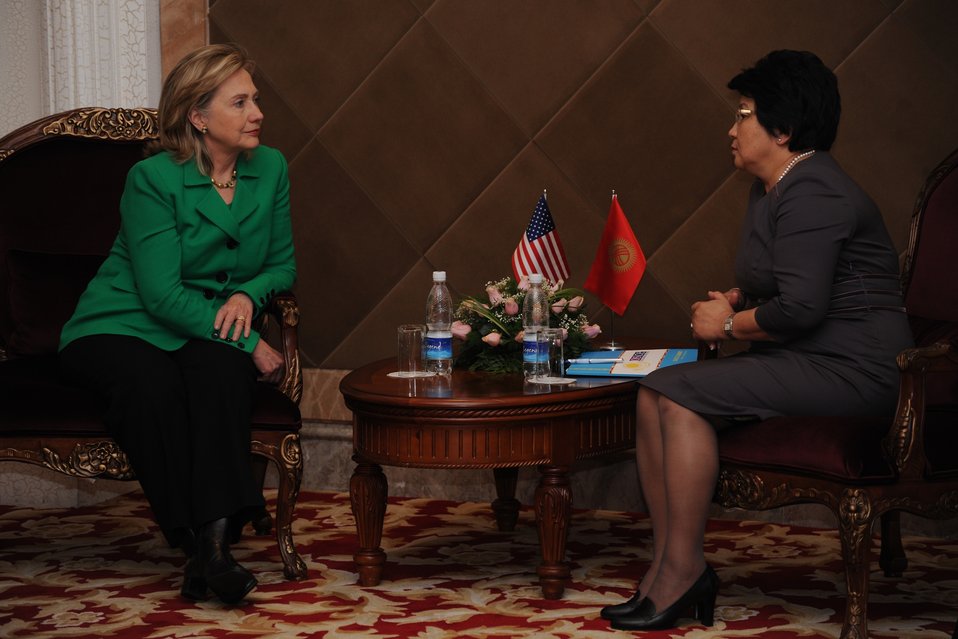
Secretary Clinton Meets With Kyrgyz President Otunbaeva

U.S. Secretary of State Hillary Rodham Clinton meets with Kyrgyz President Roza Otunbaeva in Kyrgyzstan on December 2, 2010.